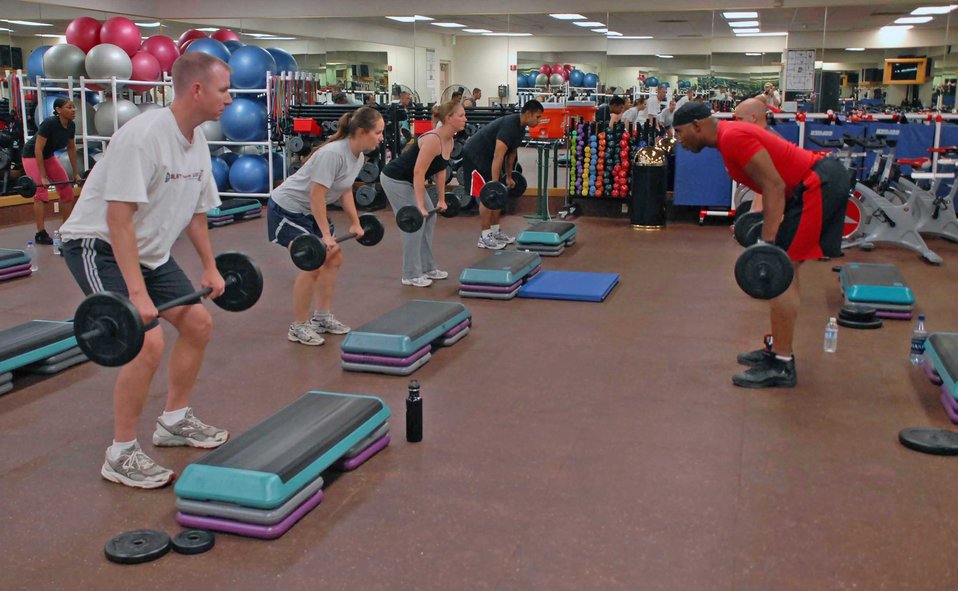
Beale AFB first to incorporate Body Pump in fitness program

Airmen participate in a group workout Aug. 17, 2009, at the fitness center at Beale Air Force Base, Calif. These Airmen were perfecting their forms and choreography prior to becoming certified instructors for the new Body Pump program recently implemented to promote fitness at Beale.